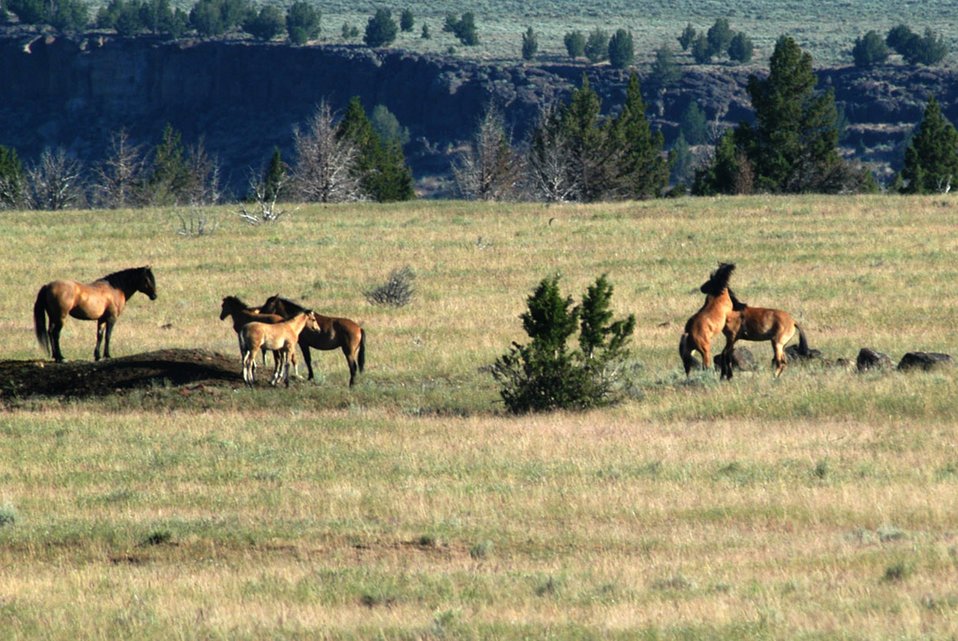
Kiger horses roam the plateaus of the Kiger Wildhorse Herd Management Area near Steens Mountain in Southeastern Oregon.